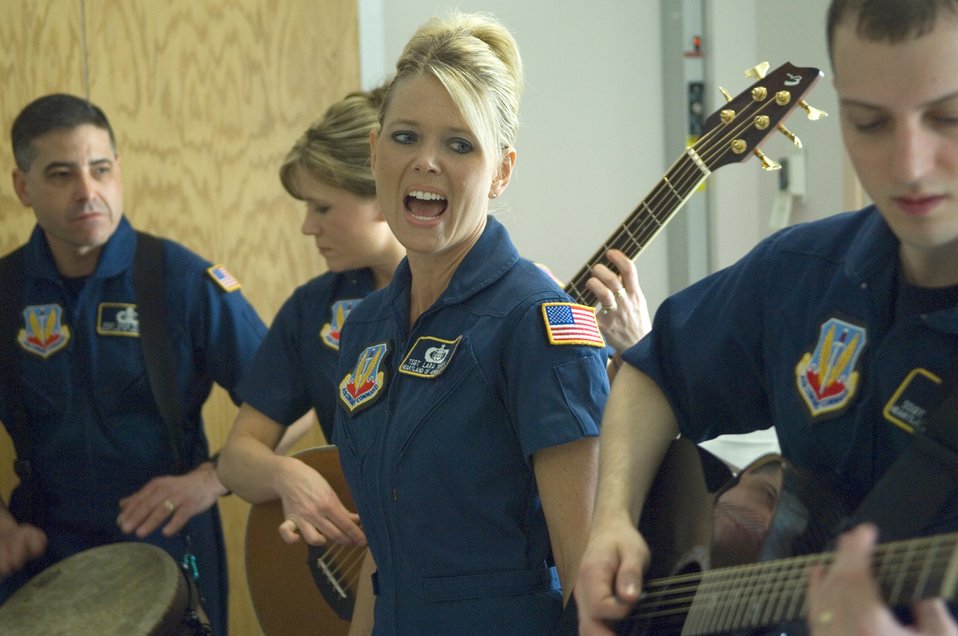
General leads morale tour at Tampa VA hospital

Members of the Air Force Heartland of America Band's Night Wing perform for servicemembers past and present April 5 at the James A. Haley Veterans' Hospital in Tampa, Fla. The band performed throughout the hospital to lift the spirits of military members. Night Wing is an ensemble of the Heartland of America Band stationed at Offutt Air Force Base, Neb.